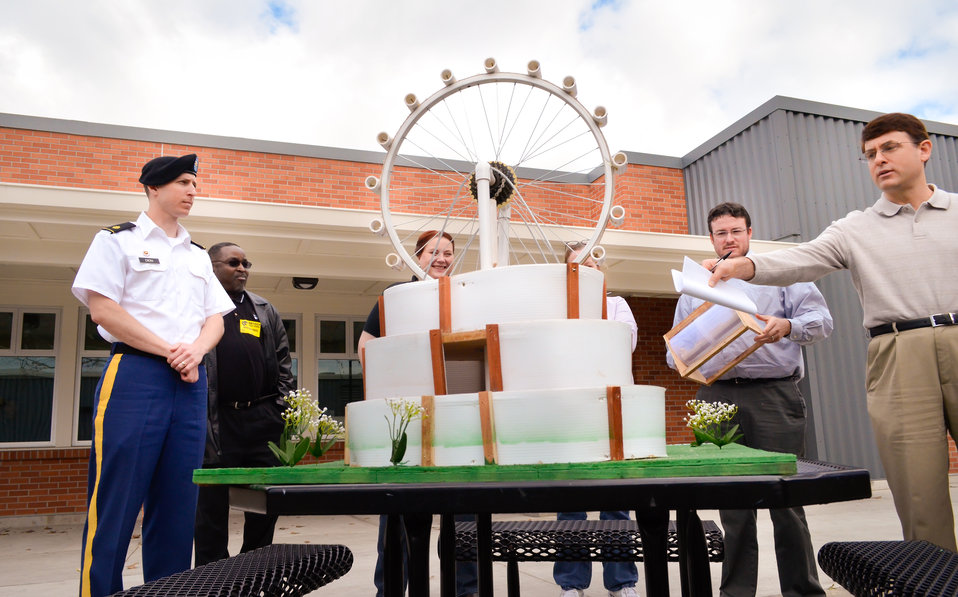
High school students recreate the Singapore Flyer

Engineers from the U.S. Army Corps of Engineers Sacramento District John Parrish (right), Levi Bowers (second from right) and Maj. Rob Dion (left) discuss a model of the Singapore Flyer, a giant observation wheel and tourist attraction in Asia, during EDGE (Engineering and Designing a Green Environment) Academy student-project presentations at Antioch High School in Antioch, Calif., Feb. 8, 2013.

The district engineers used their varied fields of expertise – electrical, mechanical, civil – to help judge projects and guide students on future endeavors. The school's EDGE program is part of a national foundation intended to prepare young people for college success. The week-long student presentations included written reports, scaled models and slideshow presentations of significant engineering feats they selected.